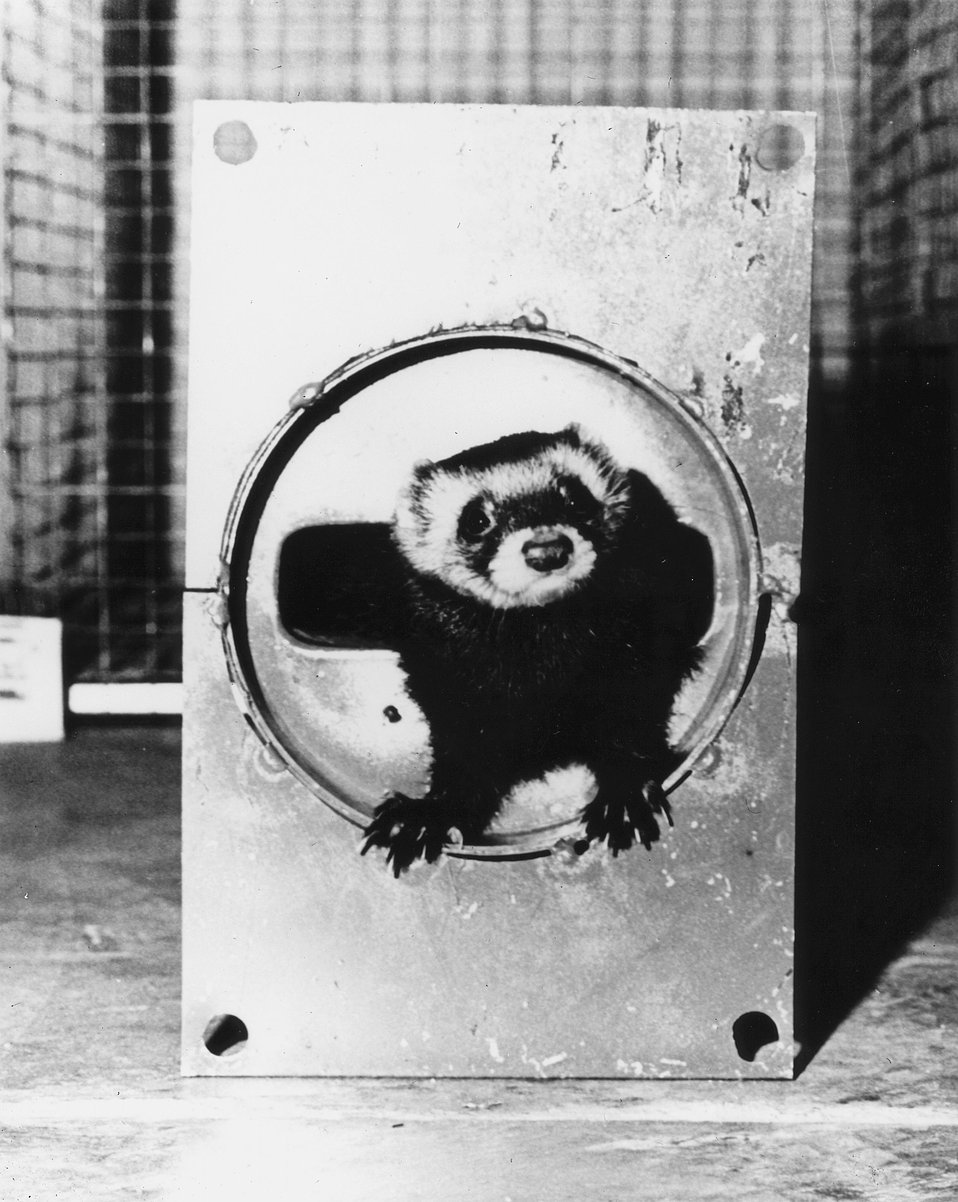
'Felicia Ferret' after her work-run through the 1 3/8' high x 5' wide vacuum pipe in a B-1 magnet at the Mason Lab under construction at the NAL.
c.1972